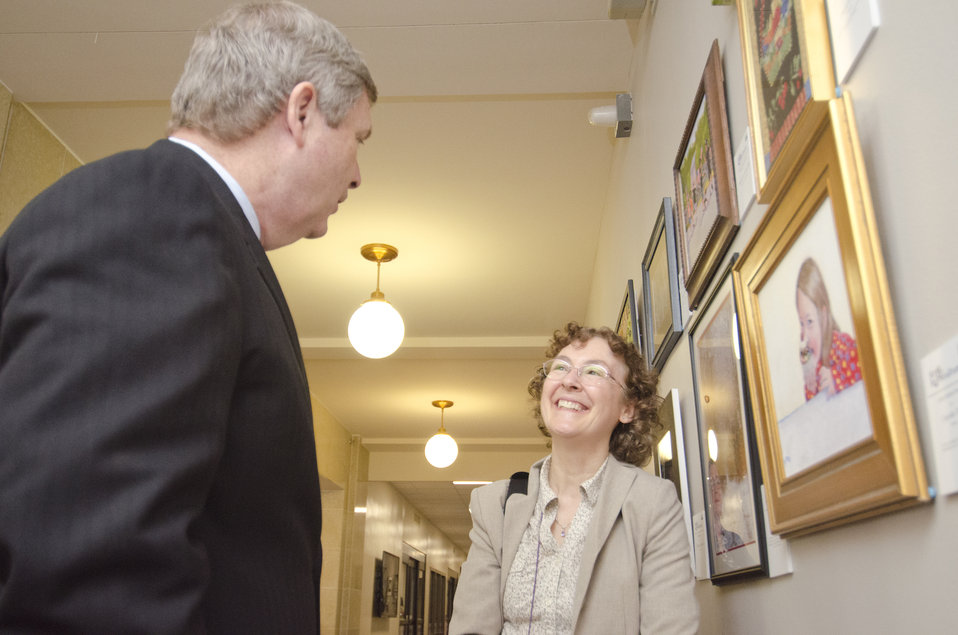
Lona Powell discusses her artwork with Agriculture Secretary Tom Vilsack during his visit to the gallery of winning entries and some of the employee artists from the inaugural competition for Art and Agriculture, Thursday, May 31, 2012, in the South Building, Washington, D.C. U.S. Department of Agriculture (USDA) full-time and part-time employees submitted art based on ten agricultural themes. The event was part of USDA's 150th Anniversary celebration and the winning artwork is on display from May 15 through December 31, 2012. Artistic expression is a creative outlet that is vital for an individual to grow and develop in their environment.